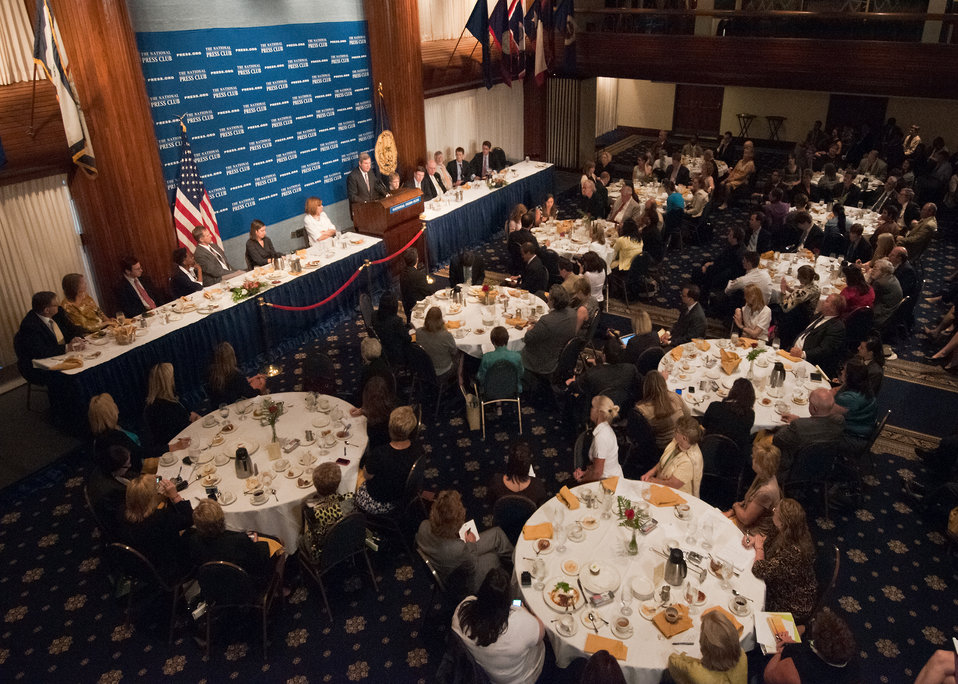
Agriculture Secretary Tom Vilsack spoke to journalists and national agriculture leaders about Innovation in American Agriculture, Sustainable Solutions to Help Feed the World at the National Press Club in Washington, DC, Monday, June 13, 2011 prior to attending the G20 Summit in France with global agriculture leaders. Secretary Vilsack mentioned in his speech, 'As we look to the future, this challenge grows even more stark. The global population is on the rise and strong economic growth in developing countries is expanding middle classes and increasing demand for agricultural products. We will have to increase food production by 70 per cent to feed a larger, richer global population of 9.3 billion by 2050. What's more, agriculture will play a role in meeting the growing demand for energy – which is expected to increase by more than 40% by 2035.”